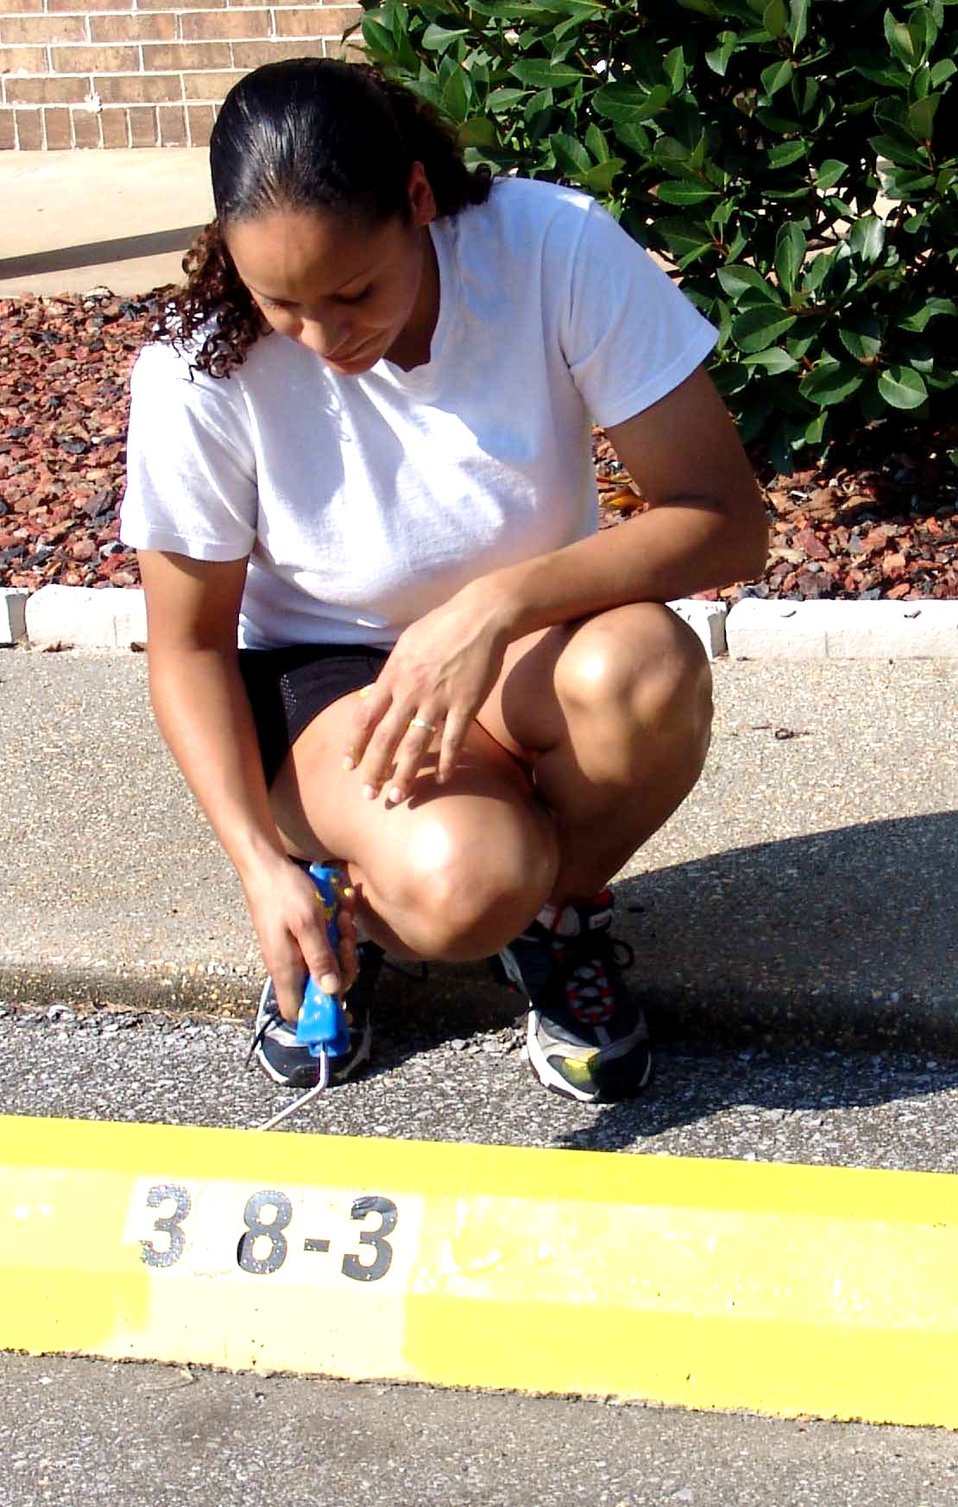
Airmen help enlisted village

SHALIMAR, Fla. (AFPN) -- Staff Sgt. Giovanna Vogt paints the parking stop barriers in front of residents' homes at the Theresa Village in Ft. Walton Beach, Fla. Sergeant Vogt is a 33rd Aircraft Maintenance Squadron supply assistant.